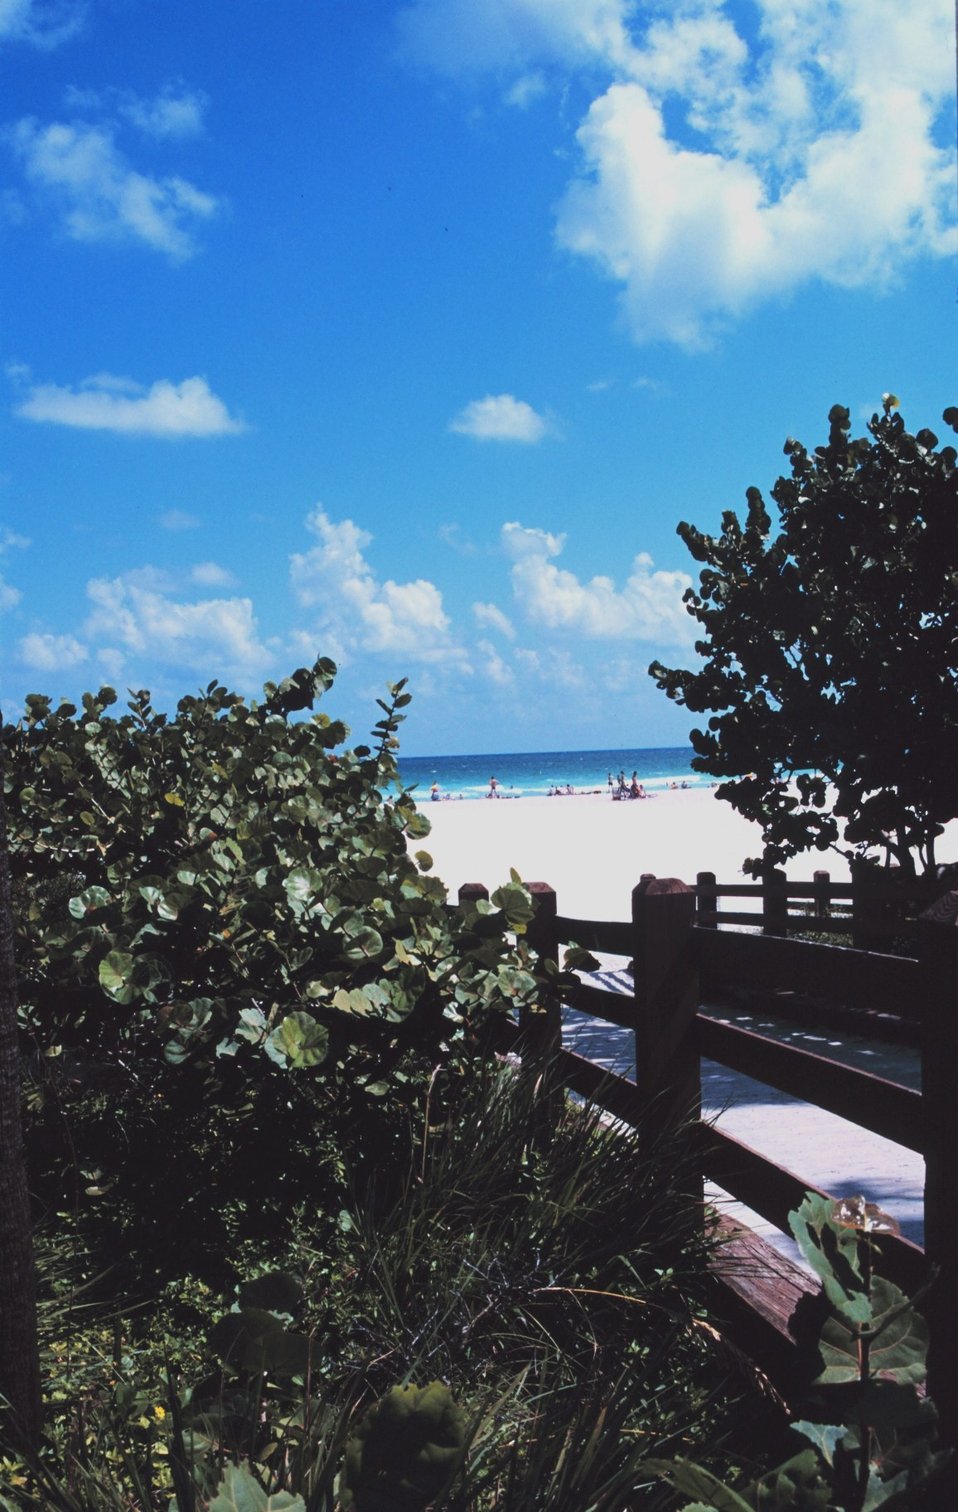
A view of the beach along the Atlantic Ocean